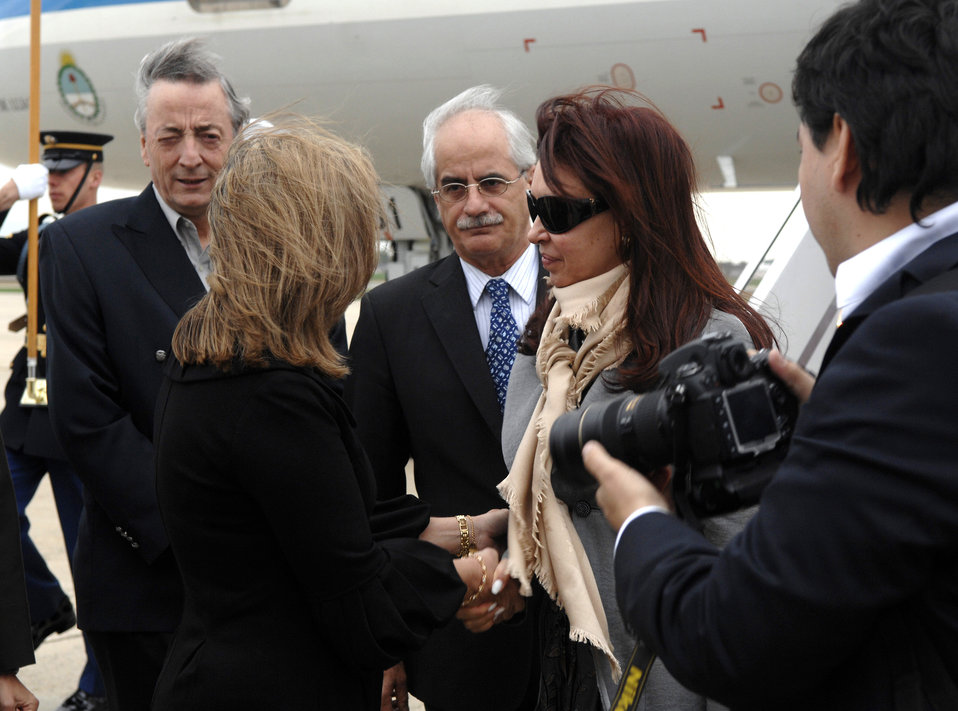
Nuclear Surety Summit

Argentine President Cristina Fernandez De Kirchner is greeted by members of the Argentinean delegation April 9, 2010, on the flight line at Joint Base Andrews, Md. Many heads of delegation are scheduled to fly in to Joint Base Andrews on their way to the Nuclear Security Summit hosted by President Barack Obama in Washington, D.C., slated for April 12 and 13.